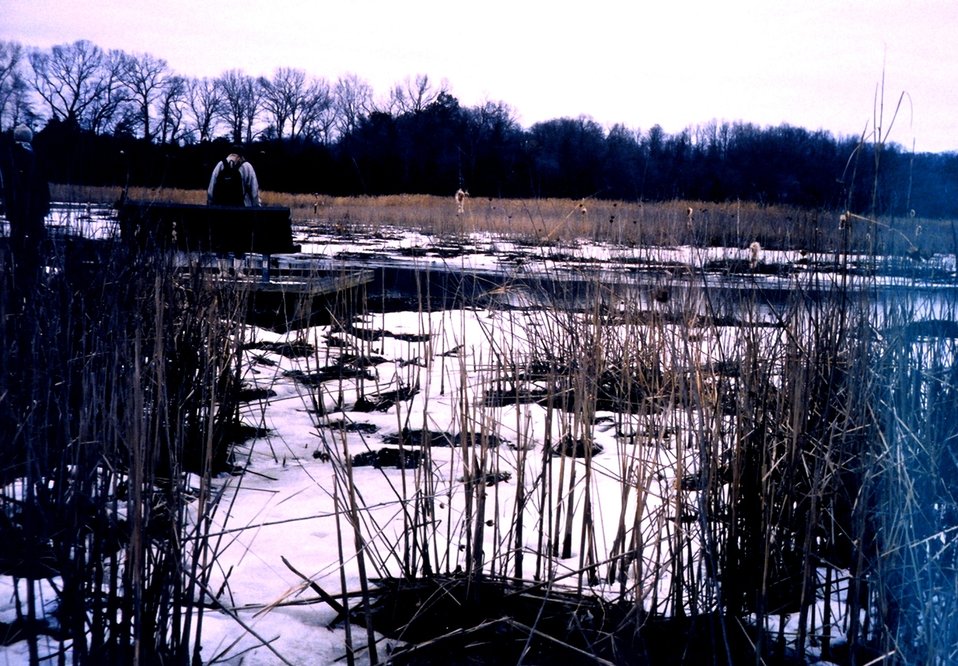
Snow in the marsh.